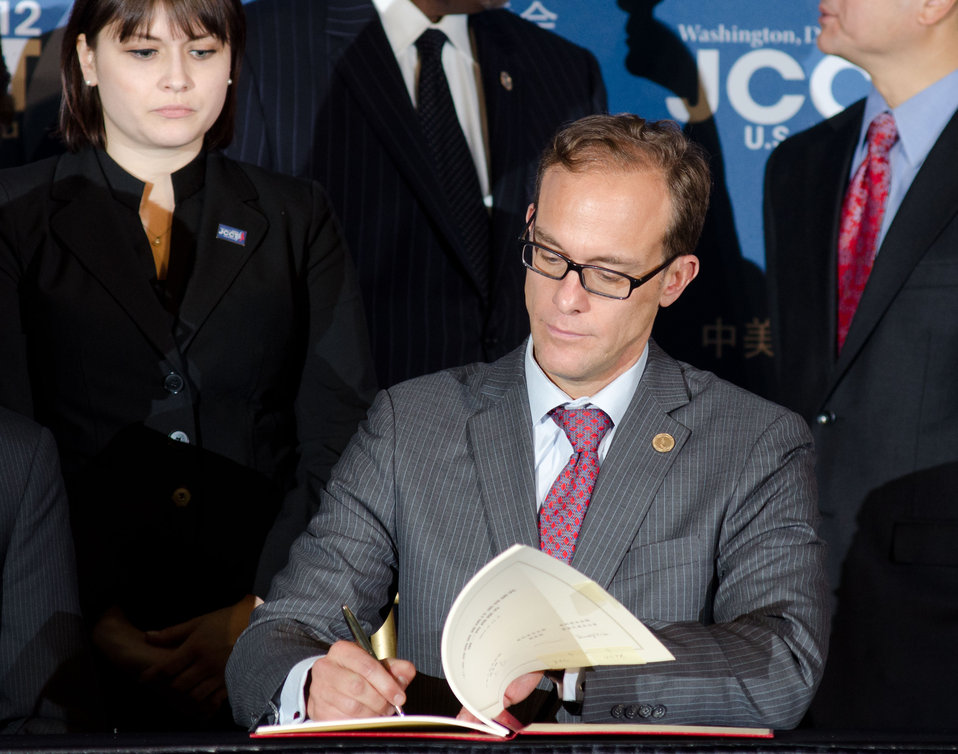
Deputy U.S. Trade Representative Ambassador Demetrios Marantis, signs the Second Phase Report on the Statistical Discrepancy of Merchandise Trade between the U.S. and China, with the support from principal leaders from the Chinese delegates and U.S. hosts, at the 23rd Session of the U.S. China Joint Commission on Commerce and Trade (JCCT) at the Andrew W. Mellon Auditorium in Washington, D.C. on Wednesday, Dec. 19, 2012. The JCCT holds high-level plenary meetings on an annual basis to review progress made by working groups that focus on a wide variety of trade issues. These working groups meet throughout the year to address topics such as intellectual property rights, agriculture, pharmaceuticals and medical devices, information technology, tourism, commercial law, environment, and statistics.